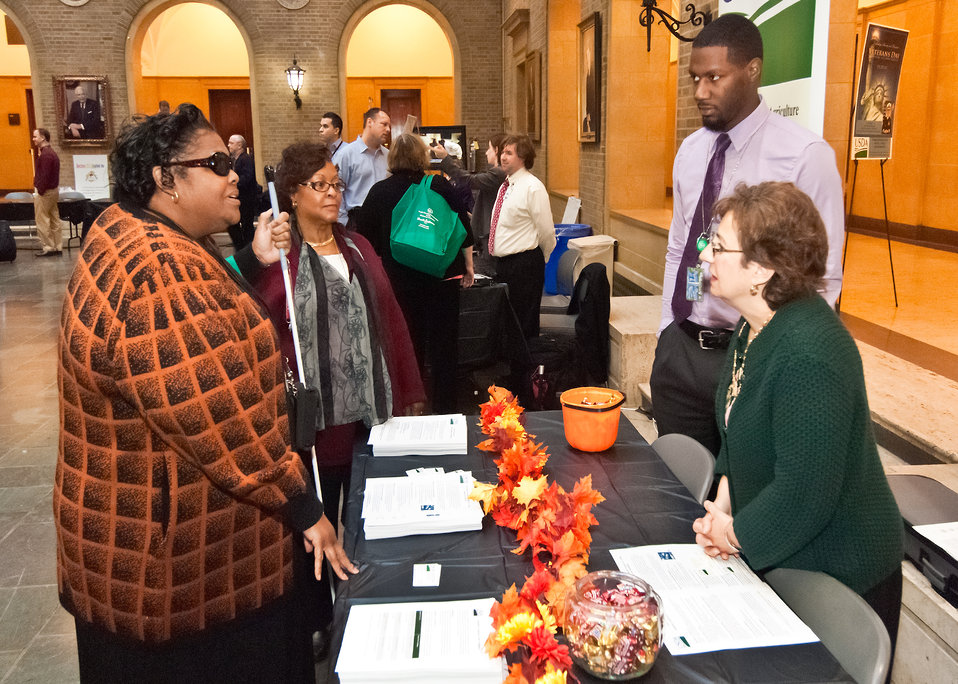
(L to R) Natural Resources Conservation Service employee Michelle Clark, Foreign Agriculture Service employee Elaine Jones, Food Safety Inspection Service employees Benjamin Tate and Mary Gioglio discuss Section 508 and how it pertains to people with disabilities at the U. S. Department of Agriculture (USDA) Section 508 and Disability Awareness Program in Washington, DC, on Monday, Oct. 31, 2011. Sponsored by the Office of the Chief Information Officer, the theme of the event was, “Turning the Key to Unlock and Eliminate Barriers by Providing Accessibility to All.” Section 508 applies to the development, procurement, maintenance or use of electronic and information technology allowing accessibility and awareness to promote inclusiveness to employees and the public with disabilities to information technology managed by the Federal government. Section 508 is part of the USDA’s Cultural Transformation Initiative to hire more employees with disabilities.